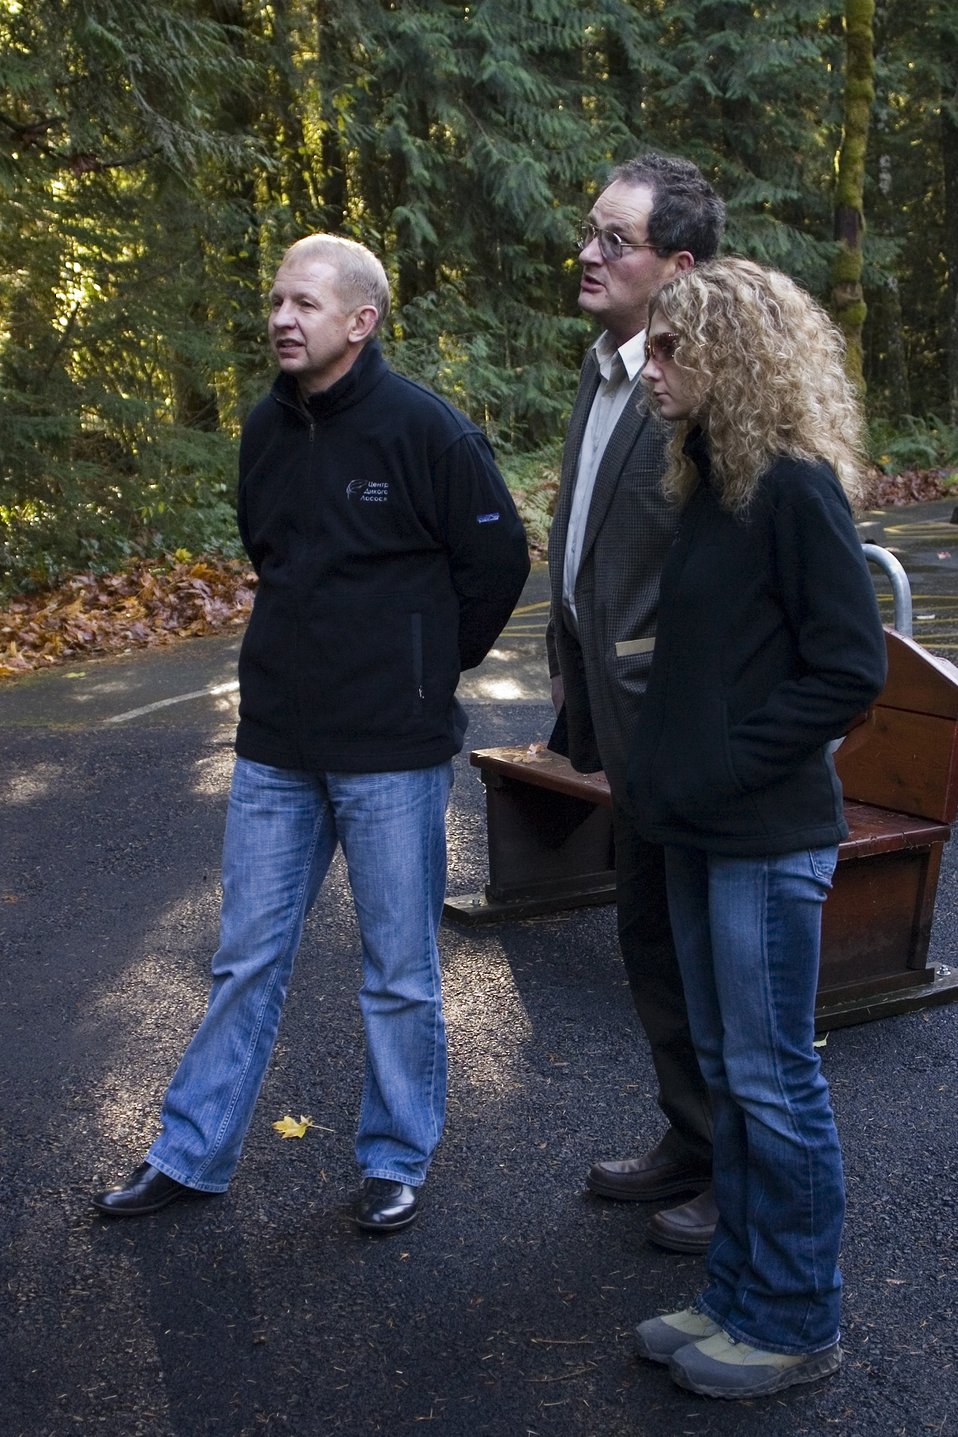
Alexander Chistyakov, Vice-Governor of Kamchatka and Oksana Rudenko Kamchatka Kamchatka Regional Administrator listen as an interpreter translates information about the Wildwood Recreation Area.